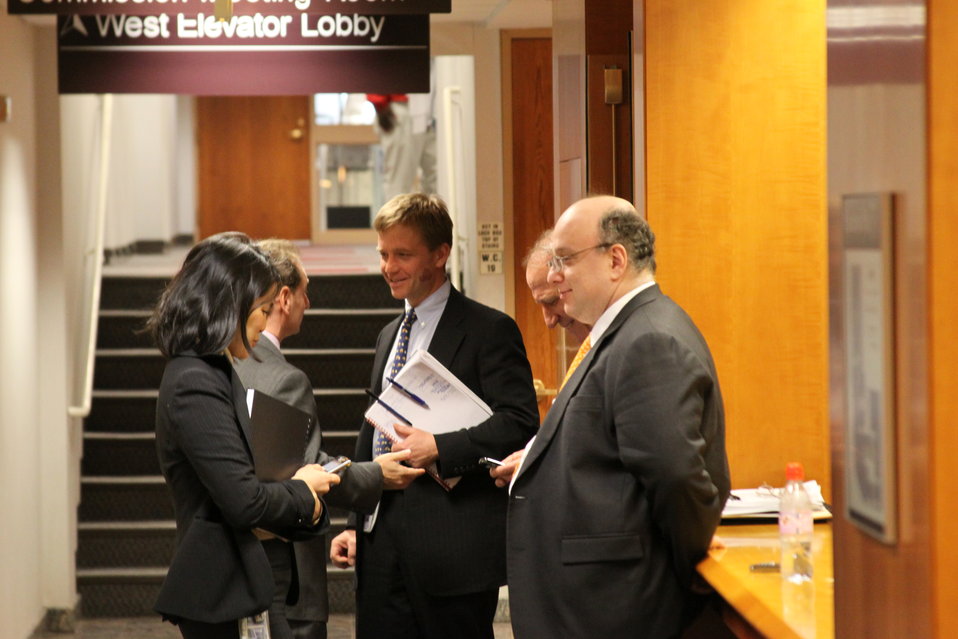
Open Commission Meeting - 2/18/2010

The Federal Communications Commission will hold an Open Meeting in Washington, DC. on February 18, 2010, which will include the following items:

E-Rate: An Order and Notice of Proposed Rulemaking to enable schools that receive funding from the E-Rate program to allow members of the general public to use the schools' Internet access during non-operating hours at no additional cost to the Universal Service Fund. This order and notice do not permit or require any changes to E-Rate applications due on February 11, 2010; Ex Parte Reform: A Notice of Proposed Rulemaking to improve the transparency and effectiveness of the FCC's decision-making process by reforming the ex parte rules; Procedural Reform: A Notice of Proposed Rulemaking to enhance the efficiency, openness, and transparency of the Commission's proceedings by improving and modernizing certain organizational and procedural rules; National Broadband Plan Status Report: Commission staff will report on the status of the National Broadband Plan, providing a framework for the national purposes portion of the Plan.